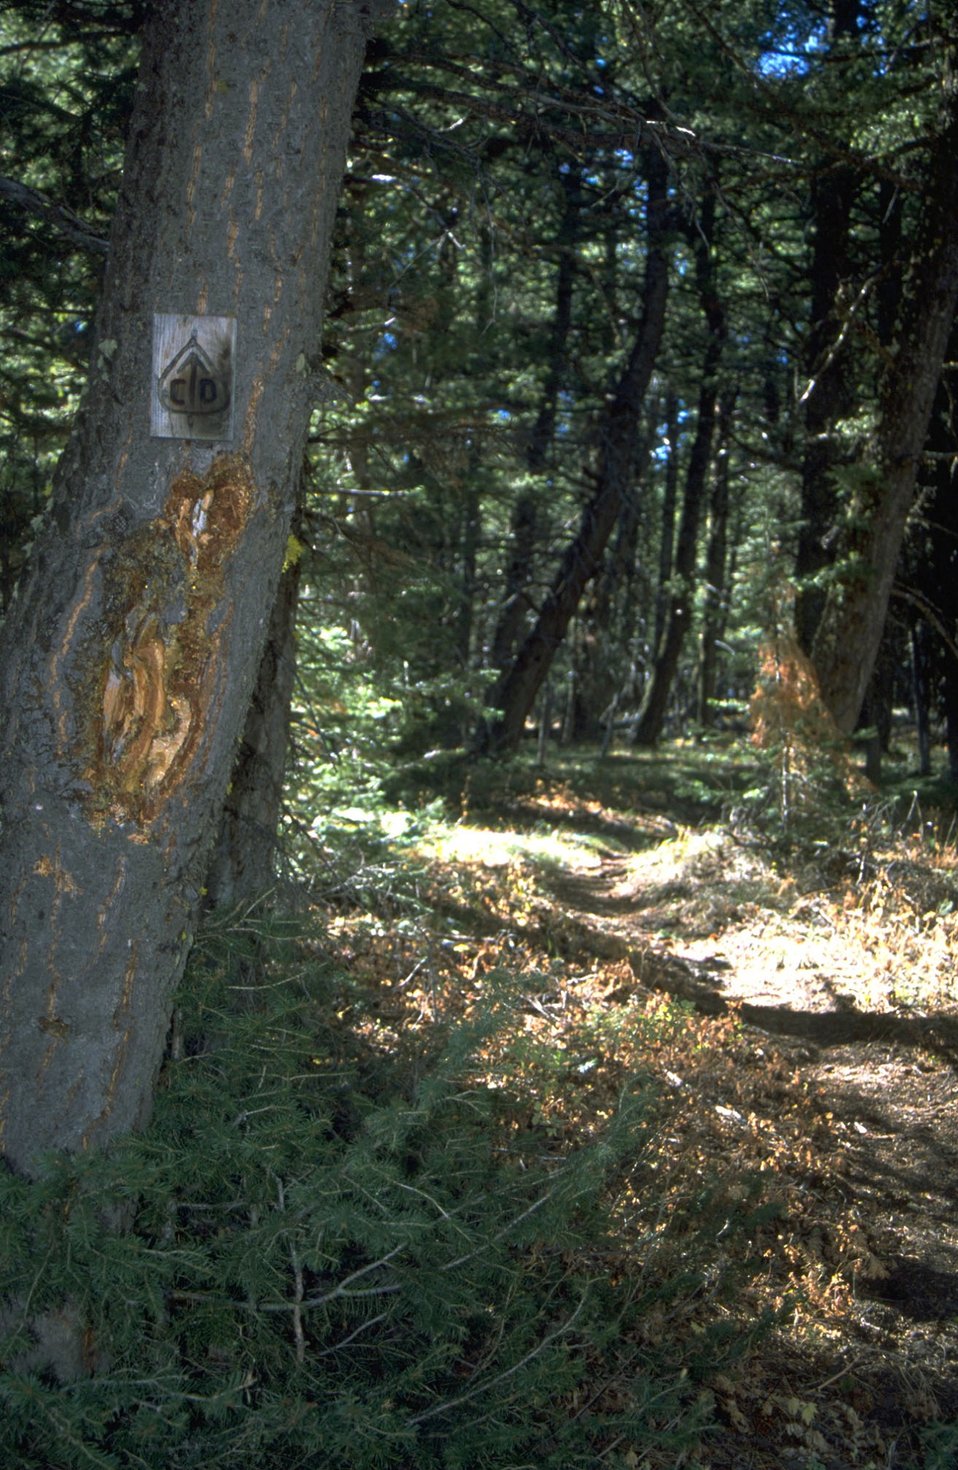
Blaze on tree - Continental Divide Trail sign adjacent to trail